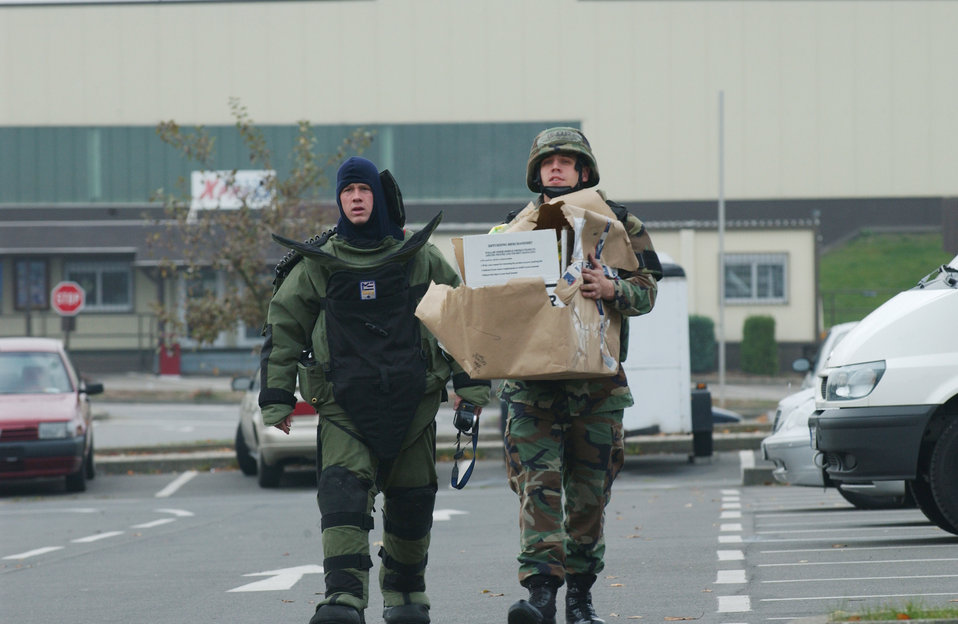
nonexplosive situation

SPANGDAHLEM AIR BASE, Germany -- Airman 1st Class Daniel Schmidt (right) and Senior Airman Jason Harrison remove a suspicious package from the post office here Oct. 27. The explosive ordnance disposal inspection determined the package contained nothing harmful. Base postal workers are trained to notice and report suspicious packages. Both airmen are assigned to the 52nd Civil Engineer Squadron's EOD flight.